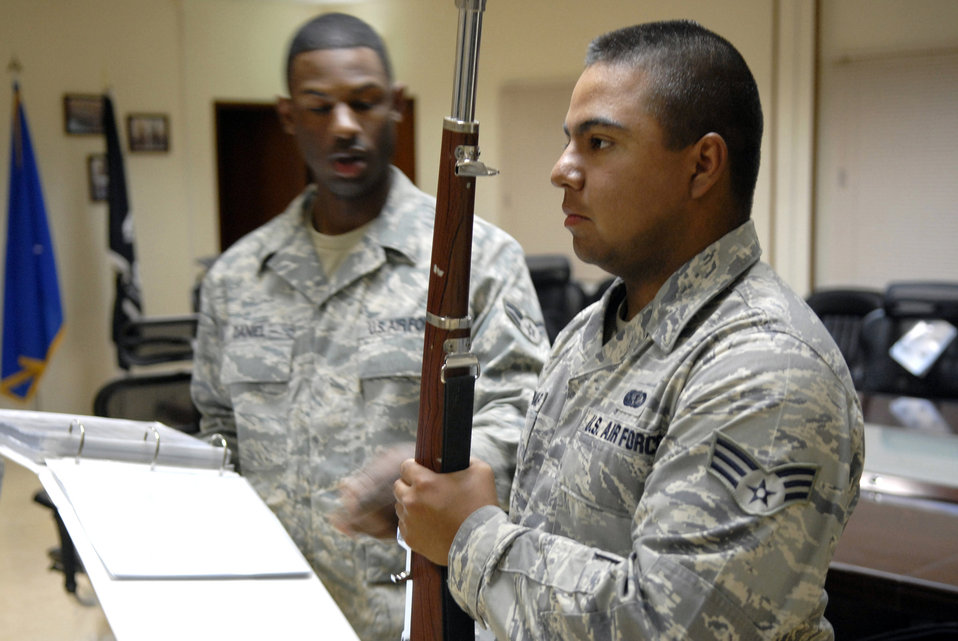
The honor guard makes their practice perfect

Airman 1st Class Clifford Daniel (left) and Senior Airman Ricardo Quintanar, base honor guard instructors, show members of the 379th Air Expeditionary Wing honor guard team correct positioning during a rifle drill Apr. 7 at an air base in Southwest Asia. Airman Daniel, with the 379th Expeditionary Civil Engineer Squadron, hails from Louisville, Ky., and is deployed from Scott Air Force Base, Ill. Airman Quintanar, assigned to the 379th Expeditionary Force Support Squadron, is from Austin, Texas, and is deployed from Dyess AFB, Texas.